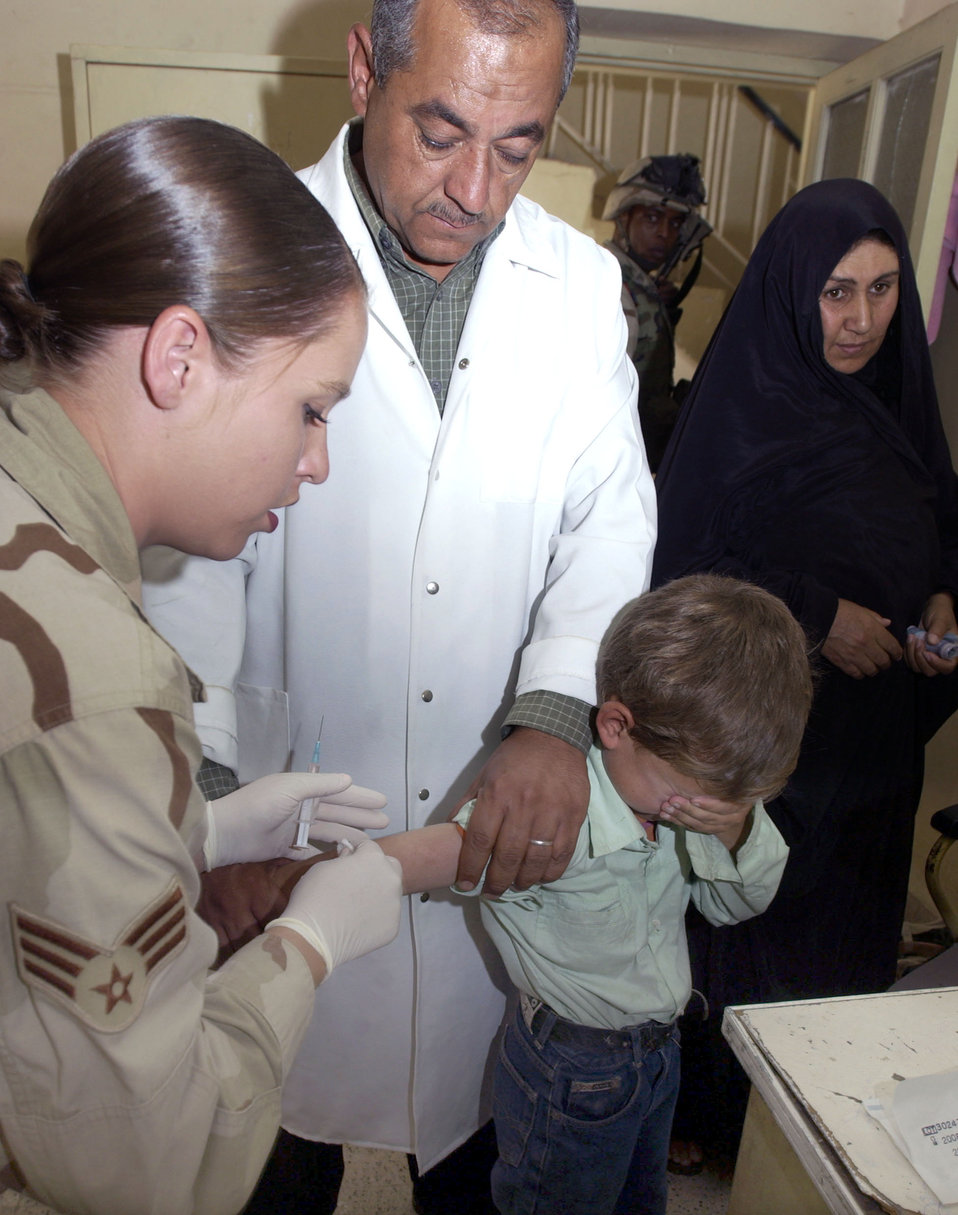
I can't look

OPERATION IRAQI FREEDOM -- Senior Airman Amber Kilpatrick and Ghassan Noor Aldin prepare to give a measles immunization to a young Iraqi boy. Kilpatrick is deployed to the 506th Expeditionary Medical Squadron at Kirkuk Air Base, Iraq. Local citizens of Kirkuk lined the streets to receive the immunizations. Airmen from the group, together with the Army's 173rd Airborne Brigade medics, have immunized more than 4,500 children with the measles vaccine.